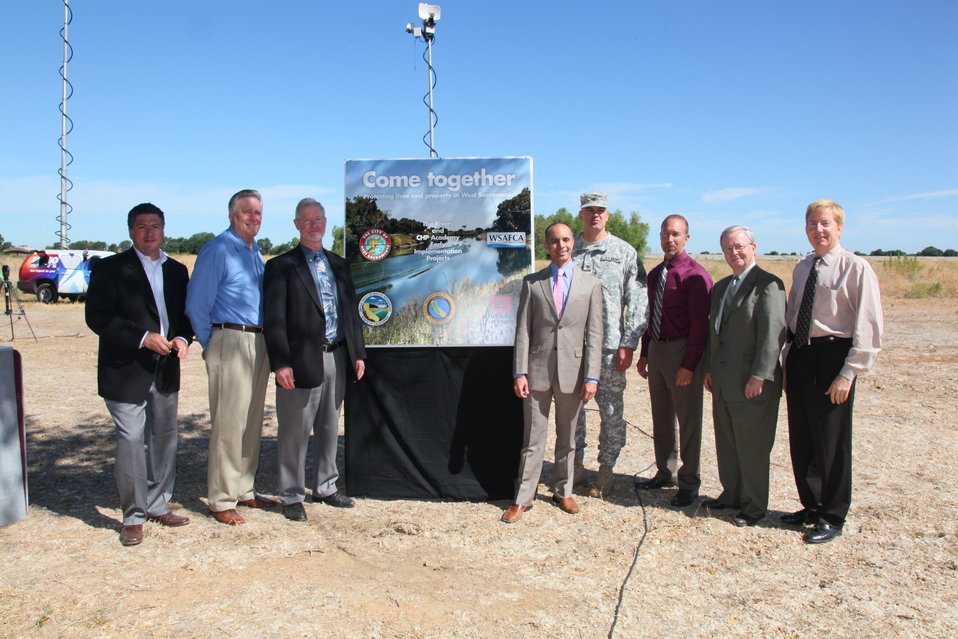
Celebrating West Sacramento levee improvements

Project partners celebrate the completion of levee improvements at a ribbon-cutting ceremony at the Sacramento Bypass in West Sacramento, Calif., June 26, 2012. Pictured at the ceremony are, from left to right, City Councilmember Chris Ledesma, City Councilmember and West Sacramento Area Flood Control Agency Board Director Bill Kristoff, California Department of Water Resources Flood Management Division Chief Keith E. Swanson, Mayor Christopher Cabaldon, U.S. Army Corps of Engineers Sacramento District Commander Col. Bill Leady, Mayor Pro Tem Oscar Villegas, Central Valley Flood Protection Board President Bill Edgar and City Councilmember Mark Johannessen. The $27 million projects, managed by the West Sacramento Area Flood Control Agency, improved the levees along the Sacramento Bypass and the Sacramento River in the north part of the city.